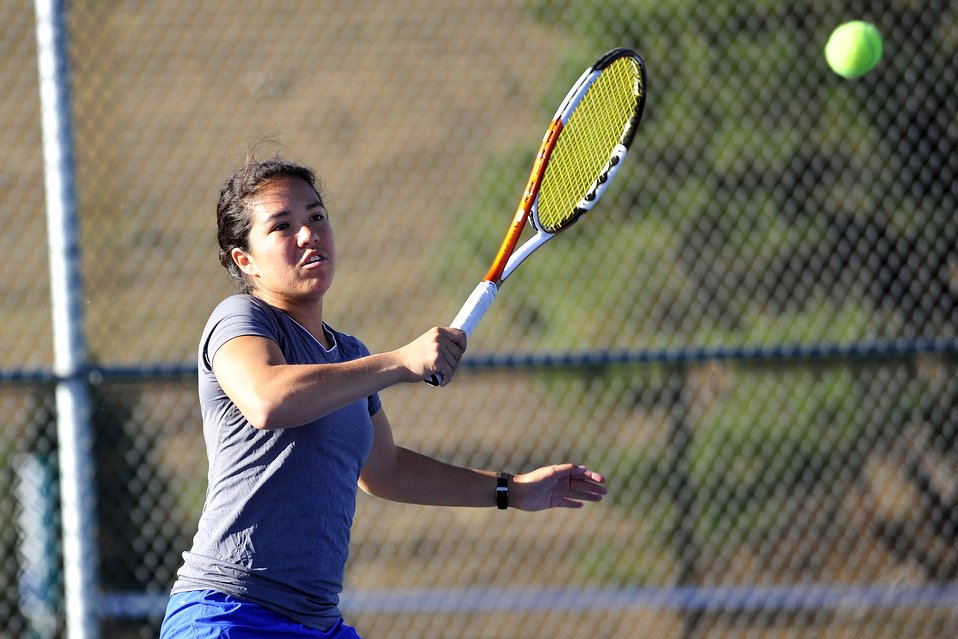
Cadets compete in tennis tournament

Falcons senior Sarah Cassman returns the ball during the